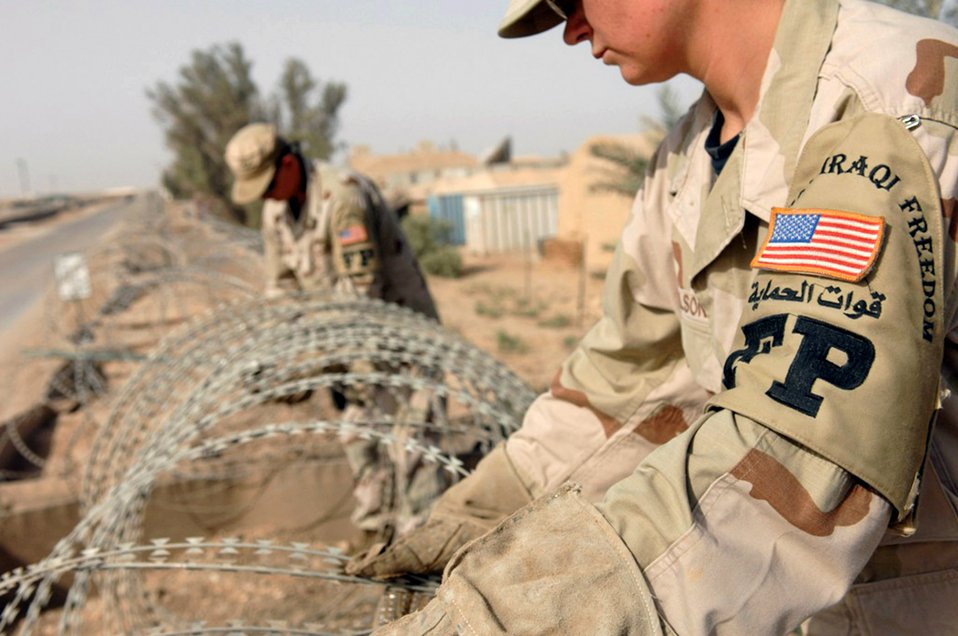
Keeping the compound safe

Tech. Sgt. Hunter Lescoe (left) and Senior Airman Margaret Wilson unwind concertina wire they are installing on a wall to protect the 407th Expeditionary Communication Squadron compound on Ali Air Base, Iraq. Both are members of the 407th Expeditionary Security Forces Squadron.